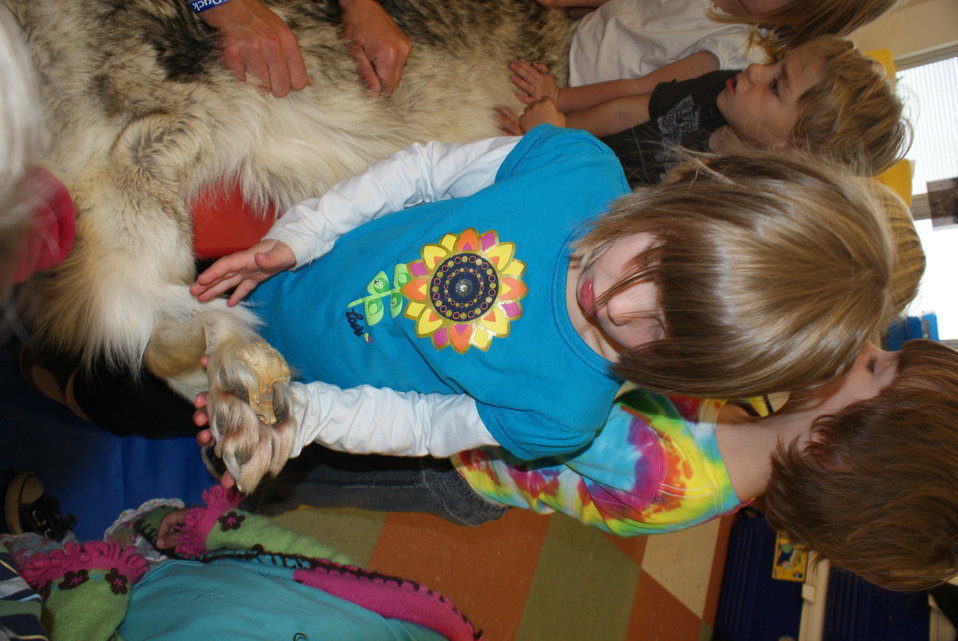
Scientists in the Community Program

U.S. Fish and Wildlife Service Mountain-Prairie Region Deputy ARD for External Affairs, Matt Kales, introduces early childhood education students at William Roberts Elementary School in Denver to some of Colorado's native and historic wildlife species.